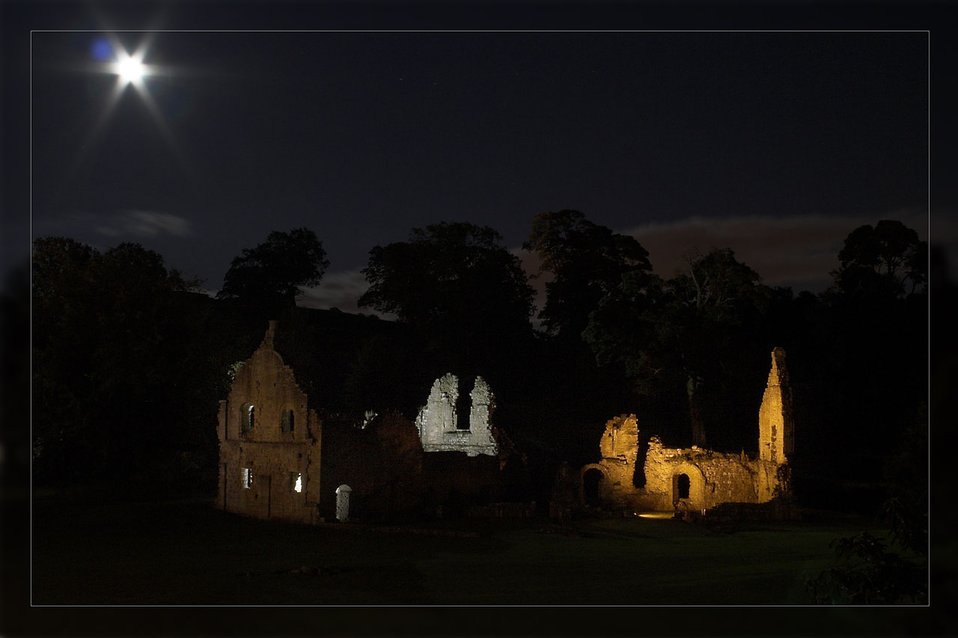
Fountains abbey at night

Fountains abbey in north yorkshire at night.